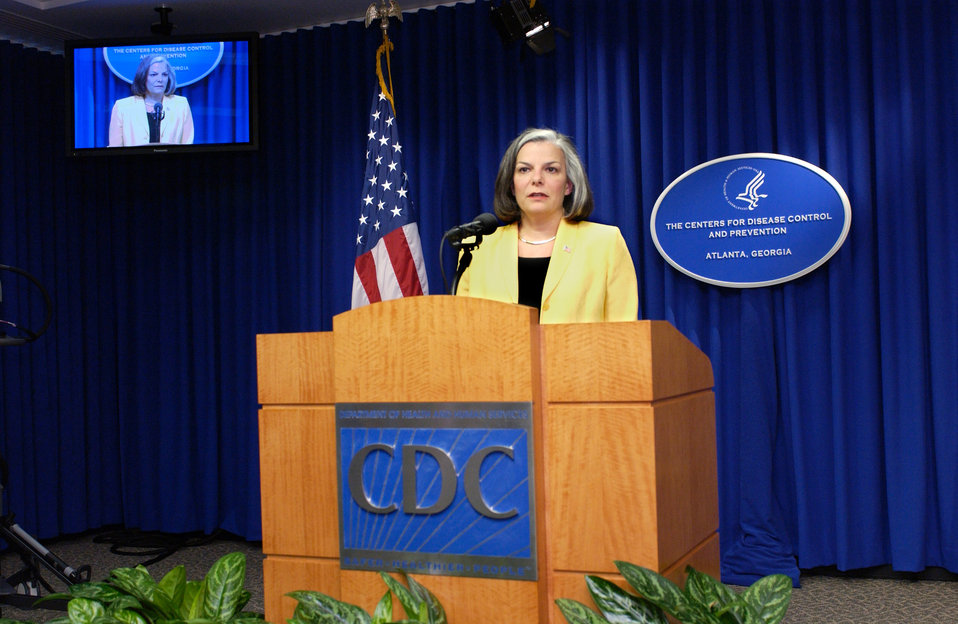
This was the former Director of the CDC (2002 - 2008), Julie Gerberding, MD, MPH addressing reporters at a news conference on September 18, 2003.